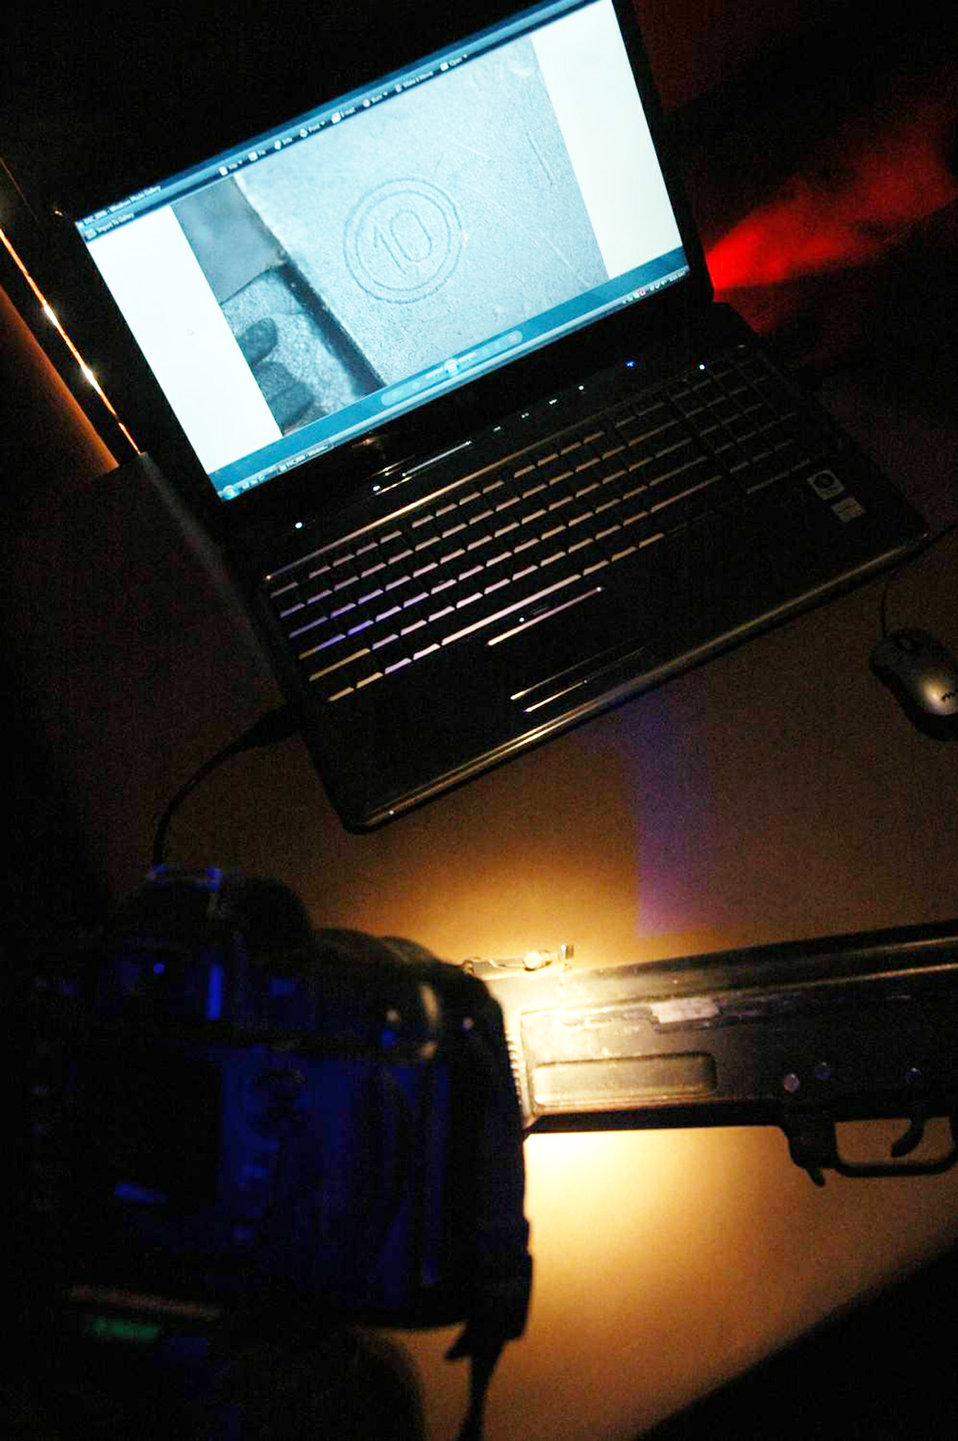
Battlefield detectives fight with fingerprints

A foreign weapon is photographed, identified and exploited by a Weapons Intelligence Team member May 16 at Al Asad Air Base, Iraq. WIT members are skilled in improvised explosive device construction, fingerprinting, biometrics, foreign weapons, media exploitation and sensitive sight exploitation.